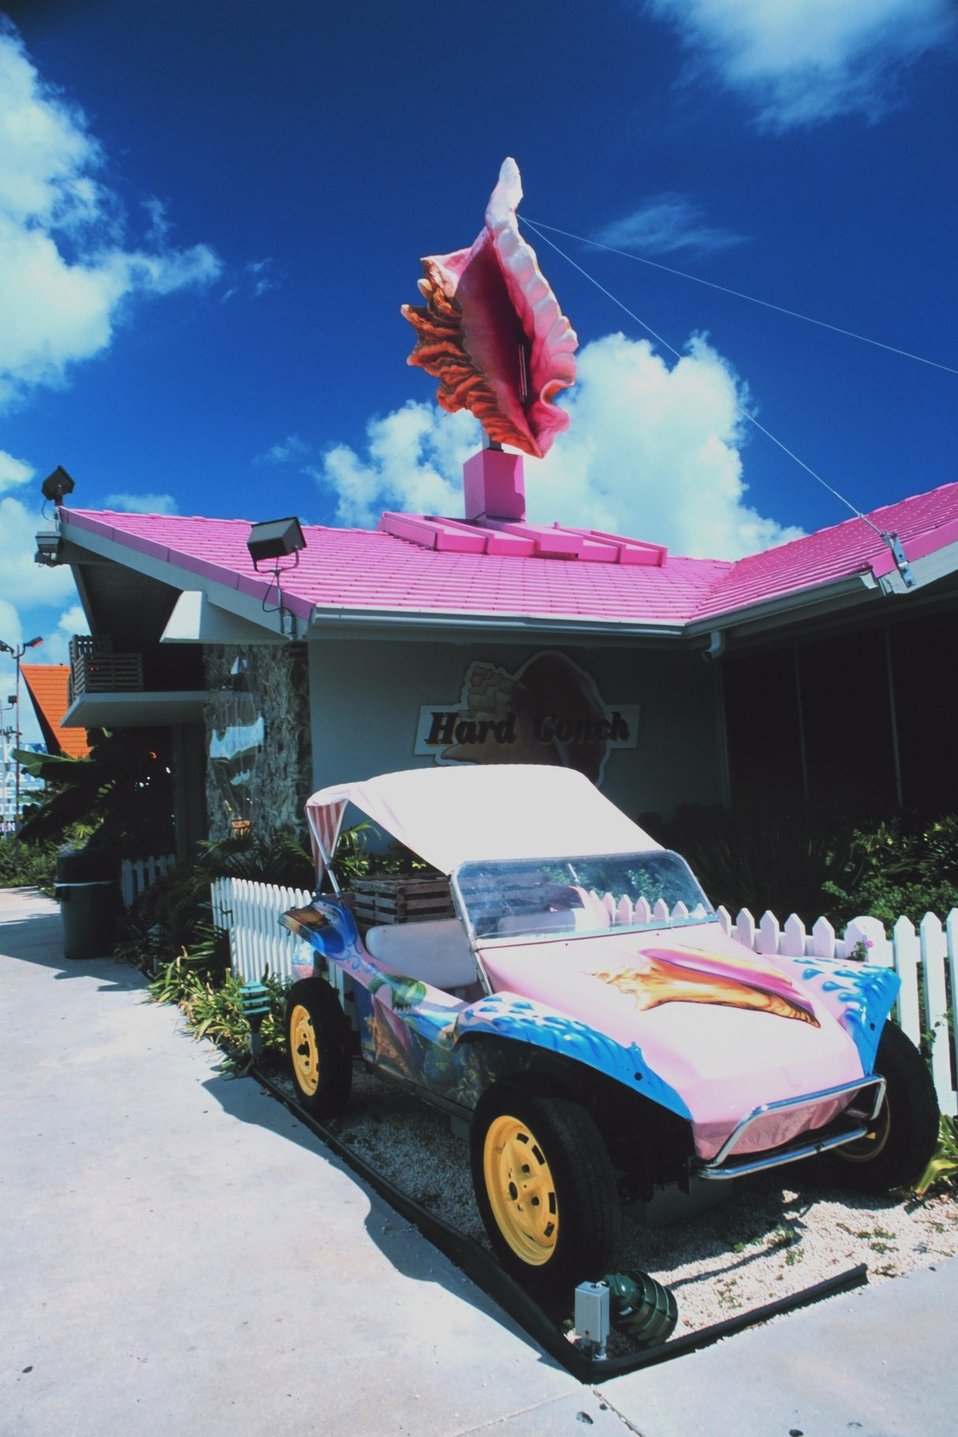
The 'Hard Conch' restaurant displays shell art